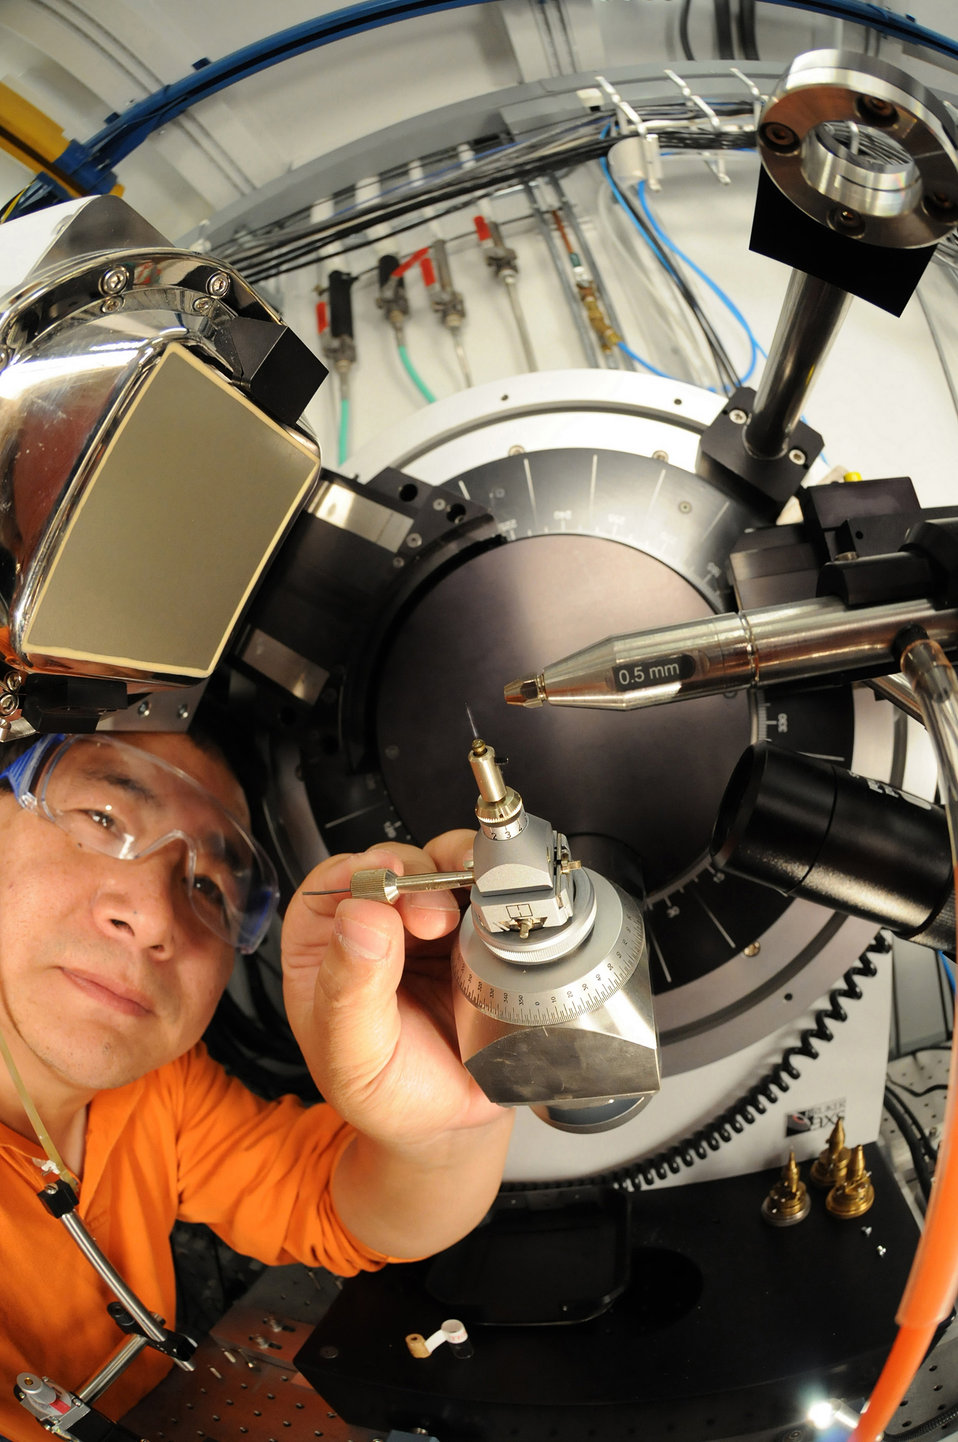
Argonne National Laboratory scientist Yu-Sheng Chen calibrates the needle of the x-ray diffraction machine at Chem.Mat.Cars in the Advanced Photon Source.

A light-transmitting compound that could one day be used in high-efficiency fiber optics and sensors that detect biological and chemical weapons at long distance almost went undiscovered by scientists because its structure was too difficult to examine. Scientists from Argonne and Northwestern University were able to determine the structure of the compound using the uniquely suited chemistry and materials (ChemMatCars) beamline of the Center for Advances Radiation Sources at the Advanced Photon Sources.